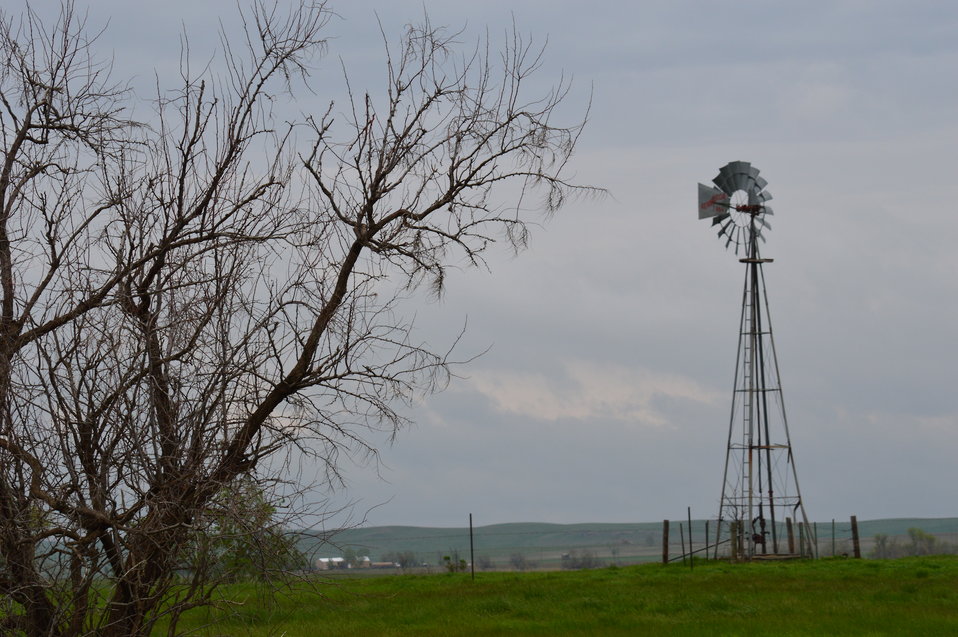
Windmill

Scenery and wildlife at Lake Ilo National Wildlife Refuge in North Dakota